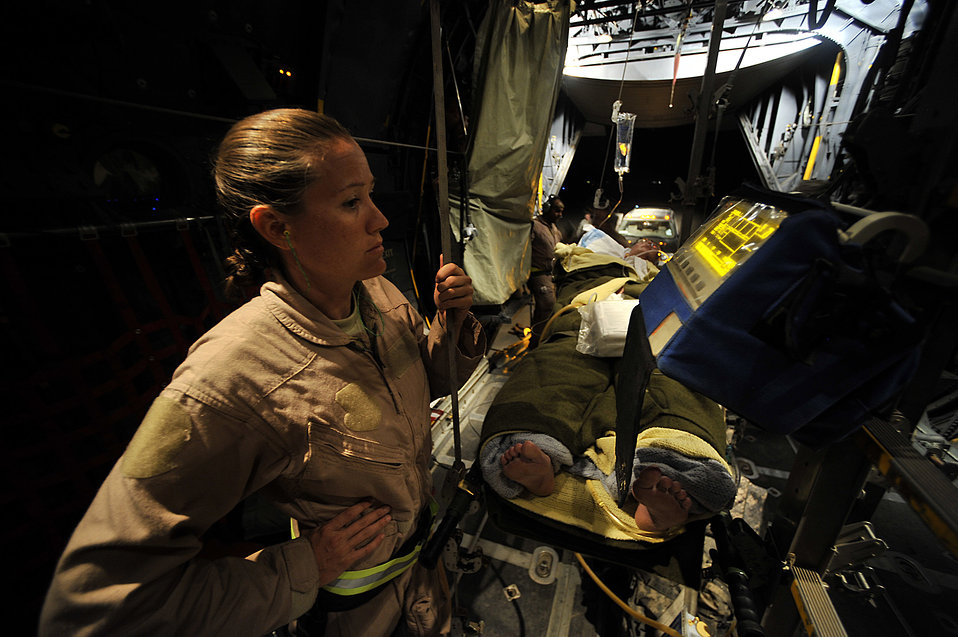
A watchful eye

Tech. Sgt. Kristy Wellman checks a patient's vital signs before take off at a base in Southwest Asia during a bandage mission Sept. 23. She is a charge medical technician with the 332nd Expeditionary Operations Support Squadron at Joint Base Balad, Iraq.